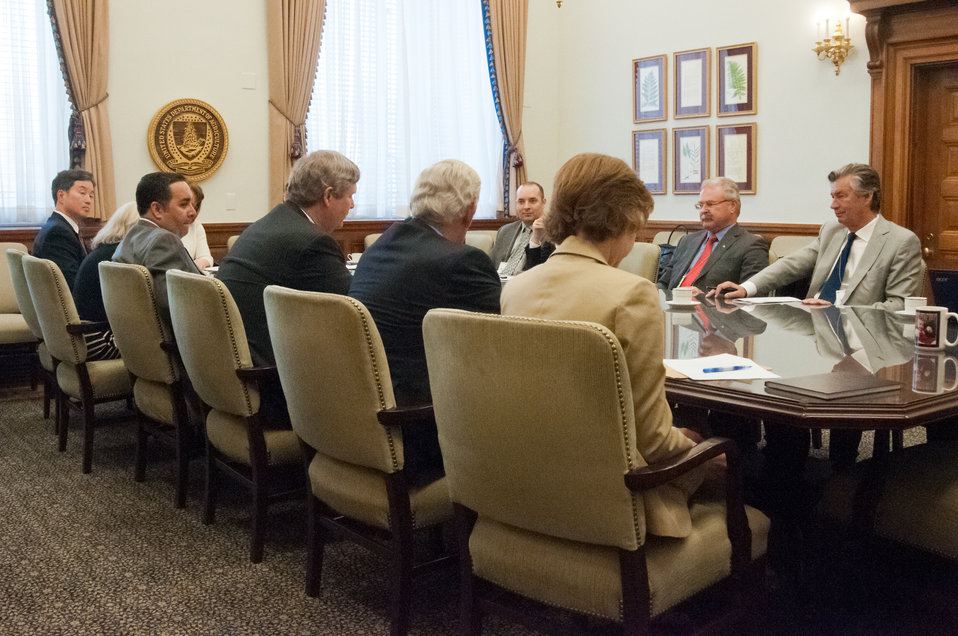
Agriculture Secretary Tom Vilsack met with Gerry Ritz, Canadian Minister of Agriculture and Canadian Ambassador Gary Doer to discuss cooperation, economics and trade in Washington, DC, Tuesday, April 9, 2013. Accompanying Secretary Vilsack were: Michael Scuse, Under Secretary Farm and Foreign Services, Deputy Under Secretary Darcy Vetter, Farm and Foreign Services, Max Holtzman Senior Advisor to the Secretary, Brian Ronholm, Deputy Under Secretary, Food Safety and Ann Bartuska, Deputy Secretary, Research Education and Economics. Accompanying Minister Ritz were: Ambassador Gary Doer, Assistant Deputy Minister Tina Namiesnoiwski, Policy Advisor Dustin Pike, Press Secretary Jeffrey English and Deputy Director Claudine Pagé.